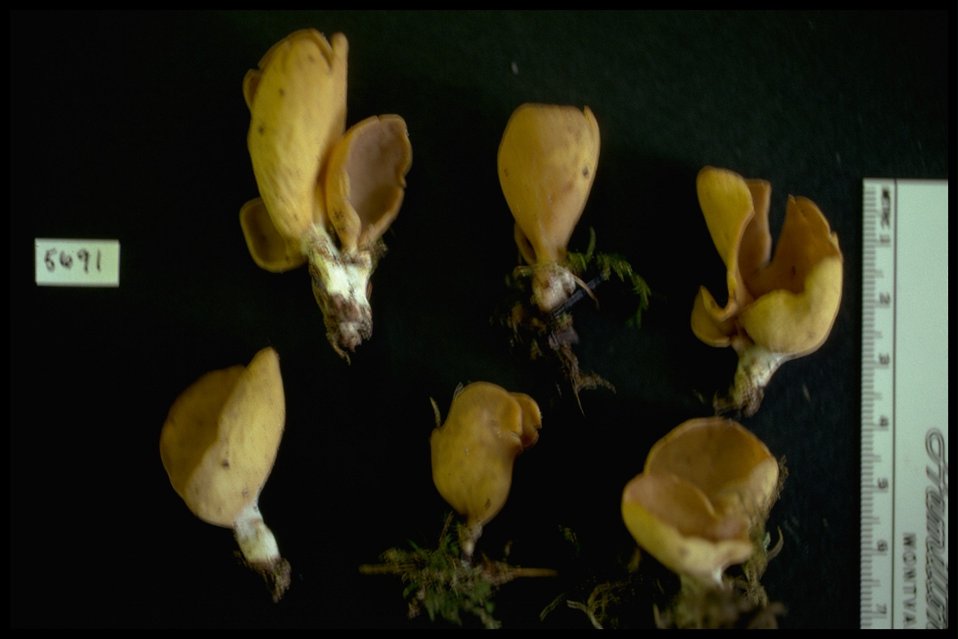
Medium shot of rabbit ears (Otidea leporina).